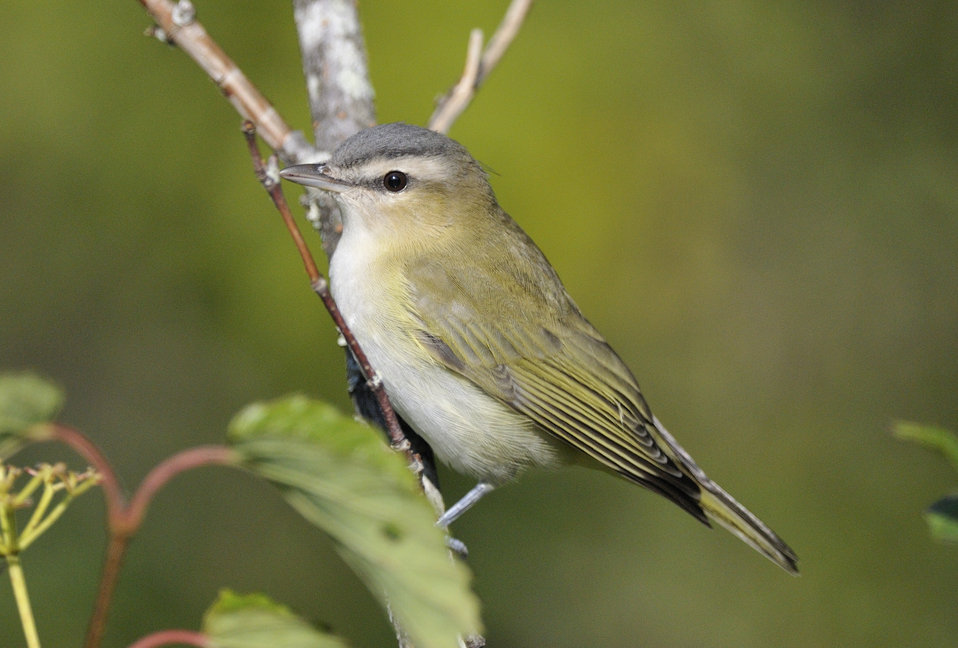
Red-eyed Vireo

Photographed in Hawley, MA.